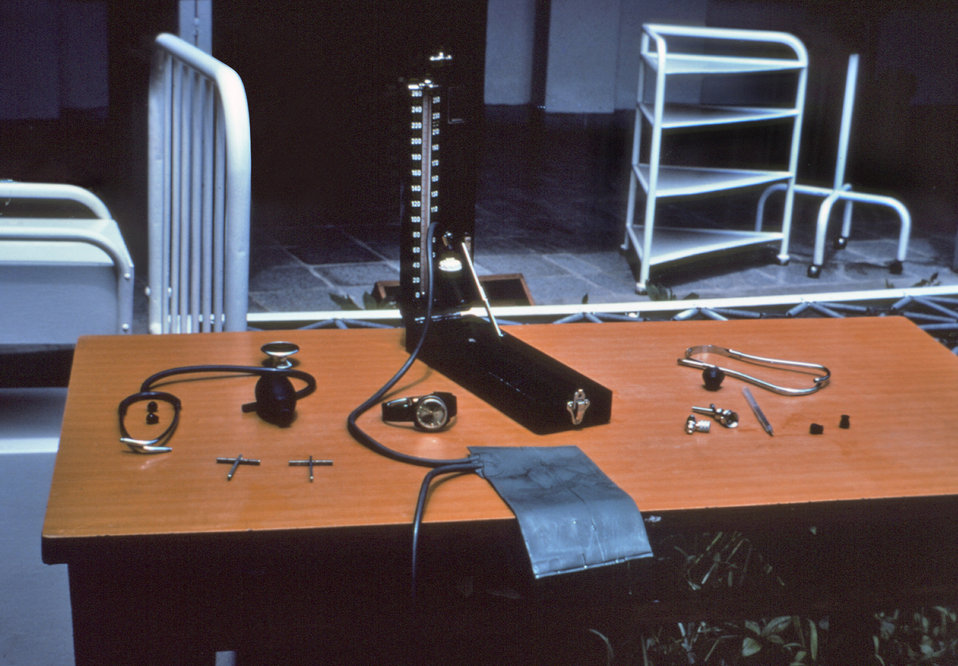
This 1976 photograph, which was taken during the 1976 Zairian (now known as the Democratic Republic of the Congo) Ebola outbreak, showed hospital instruments, along with a number of personal patient items that were disinfected, in order to help control the spread of the deadly virus.